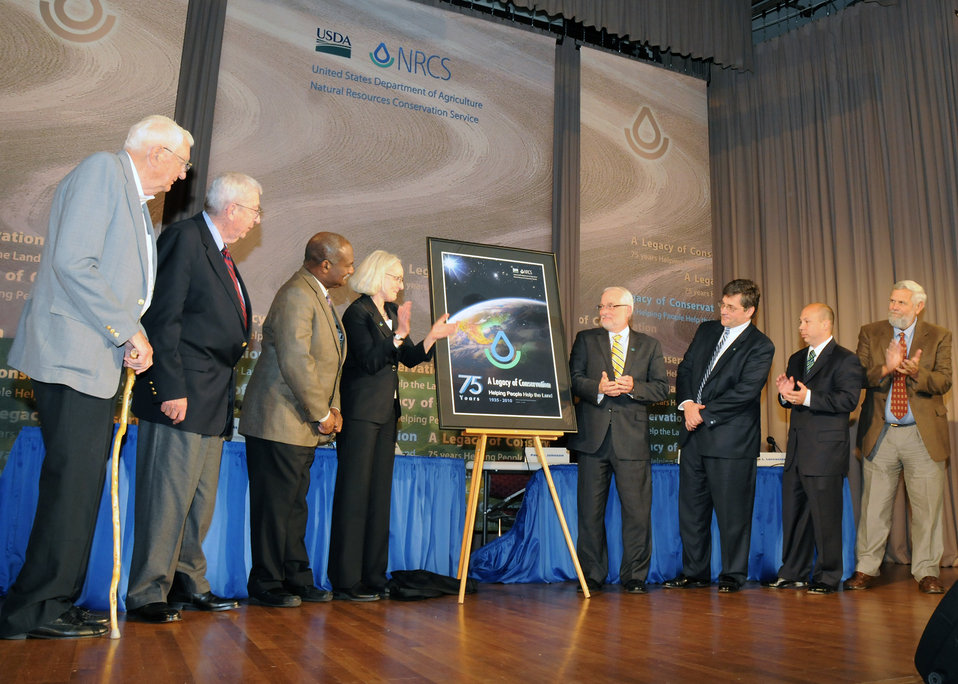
The Natural Resource Conservation Service (NRCS) 75th Anniversary poster was revealed at a ceremony in Washington, D. C., on Tuesday, April 27, 2010. A panel discussion on the history of NRCS was held with six former NRCS chiefs as well as the current chief. Left to right R. M. (Mel) Davis, William J. Richards, Assistant Secretary for Administration Pearlie S. Reed, Deputy Under Secretary for Natural Resources and Environment Ann Mills, current NRCS Chief Dave White, Bruce Knight, Arlen Lancaster, and Paul Johnson. USDA photo 10di1330-124